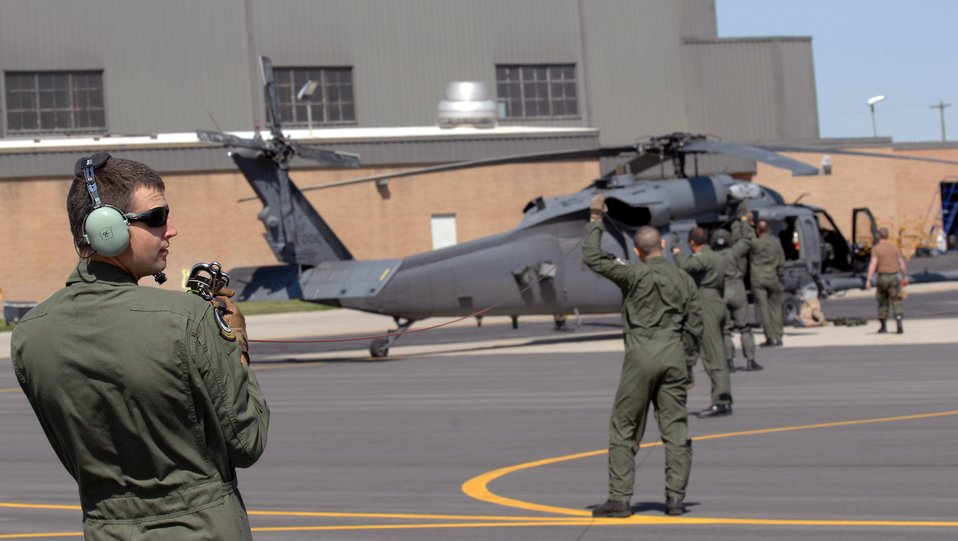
Search and rescue training

Staff Sgt. Greg White leads squadron members in an HH-60 Pave Hawk pre-flight hoist cable check May 3 during a combat search and rescue integration exercise in Sandy, Utah. The objective of the exercise was to expand expertise and integration with Utahs 211th Aviation Group AH-64 Apache Joint Rotary Wing, 4th Fighter Squadron F-16 Fighting Falcon Striker assets, Special Operations Forces and conduct extensive joint CSAR operations against surface-to-air threats. Sergeant White is an an aerial gunner with the 34th Weapons Squadron at Nellis Air Force Base, Nev.